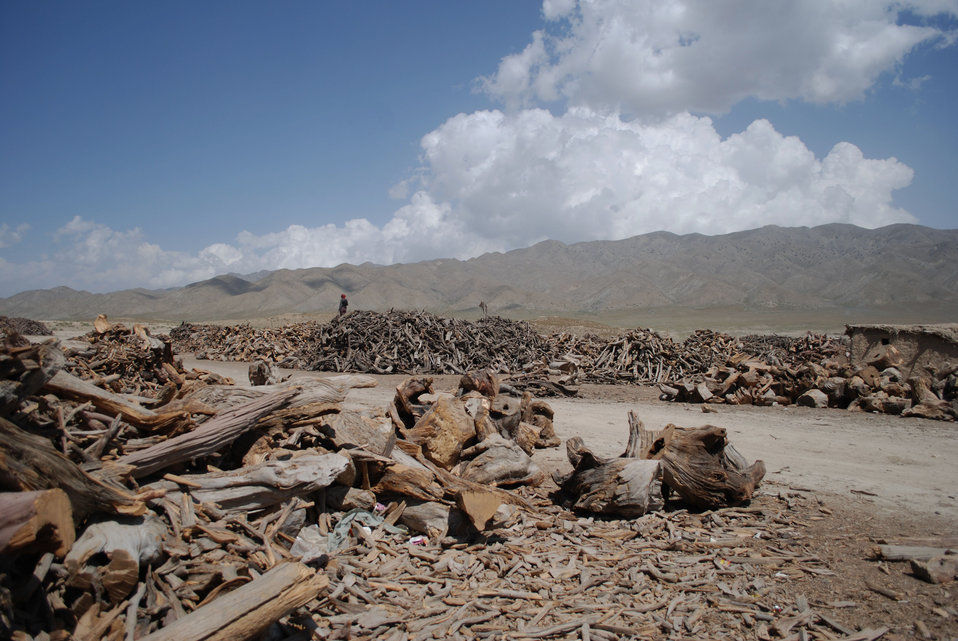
'On the Road' in Paktya Province